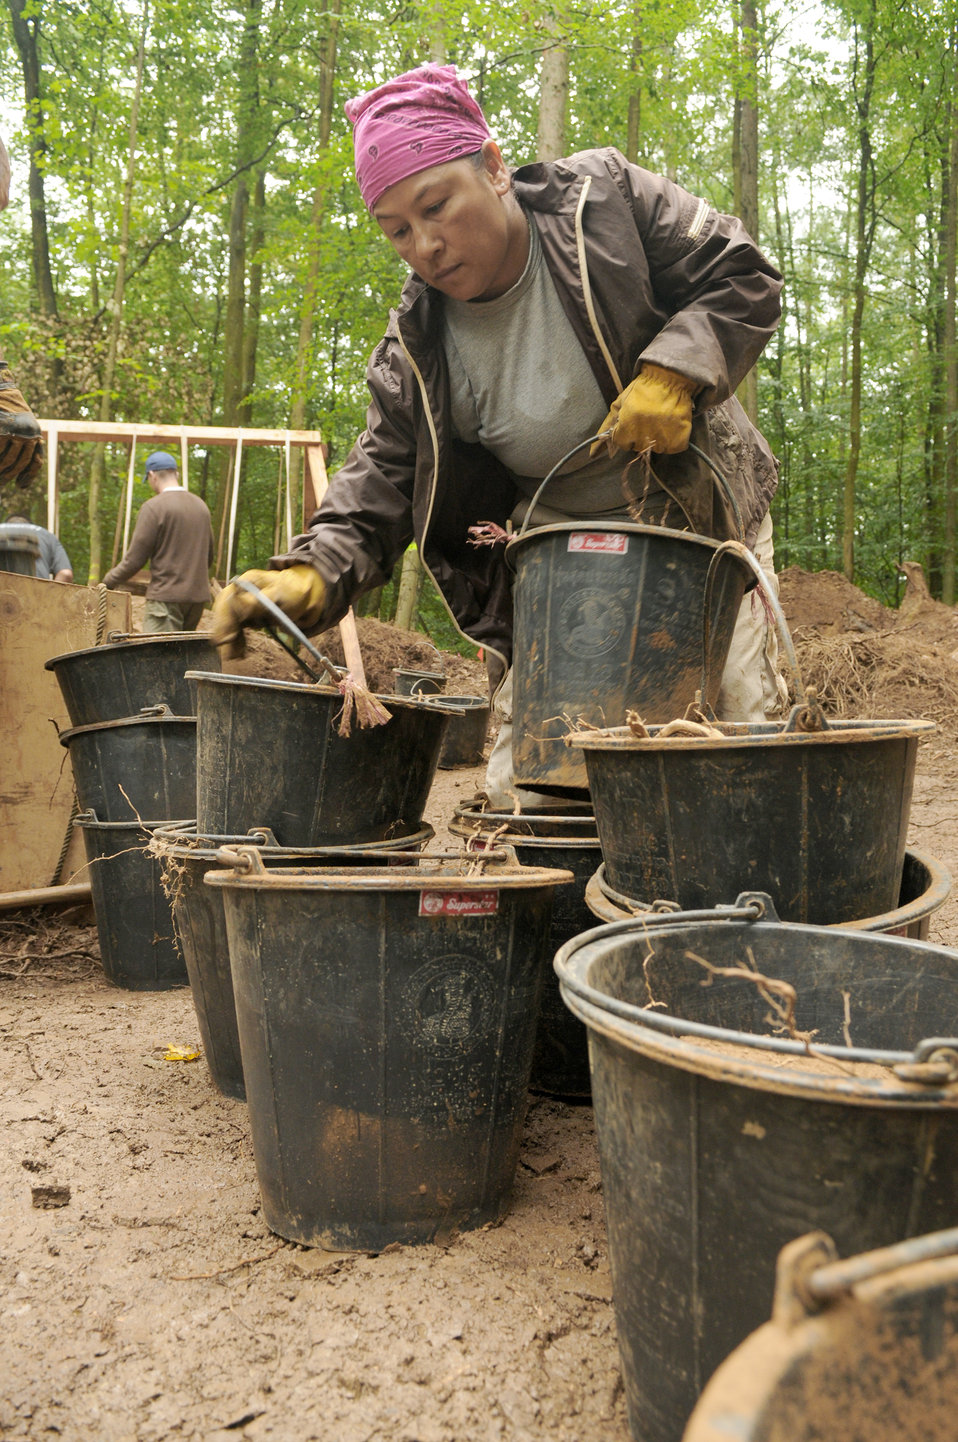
Joint team searches for fallen Airmen in local German forest

Master Sgt. Victoria Querido moves buckets of dirt from the excavation point to sifting stations July 28, 2010, in Rheinland-Pfalz, Germany. The dirt was sifted in search of wreckage from an aircraft downed during World War II. Sergeant Querido is assigned to the Joint Prisoners of War/Missing in Action Accounting Command.